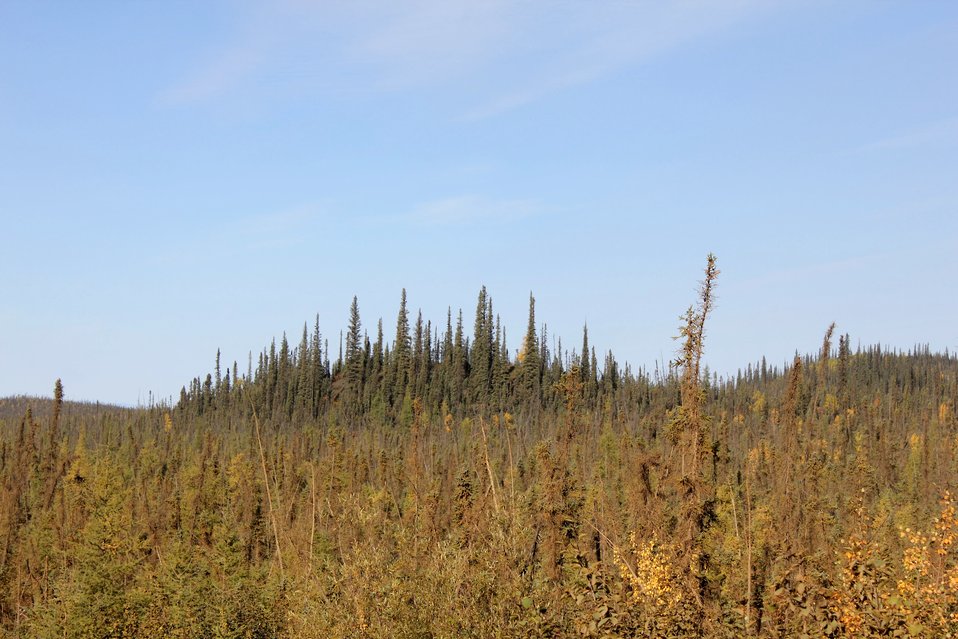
Small scraggly black spruce in foreground with shallow active soil layer while larger trees are located on deeper active layer with more nutrients.